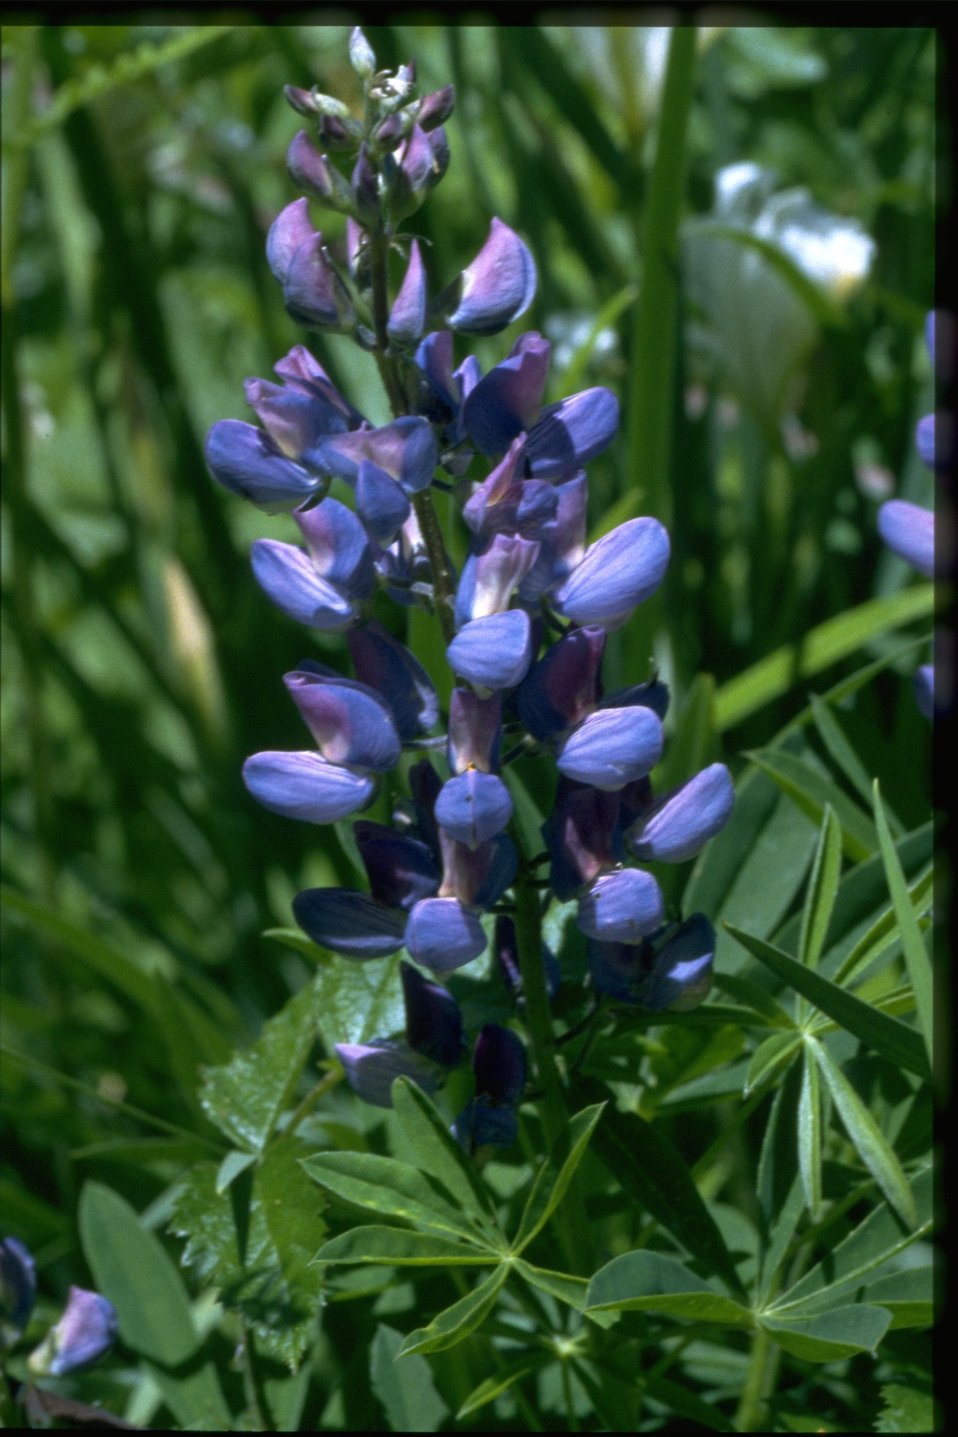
Closeup shot of Lupinus arcticus.